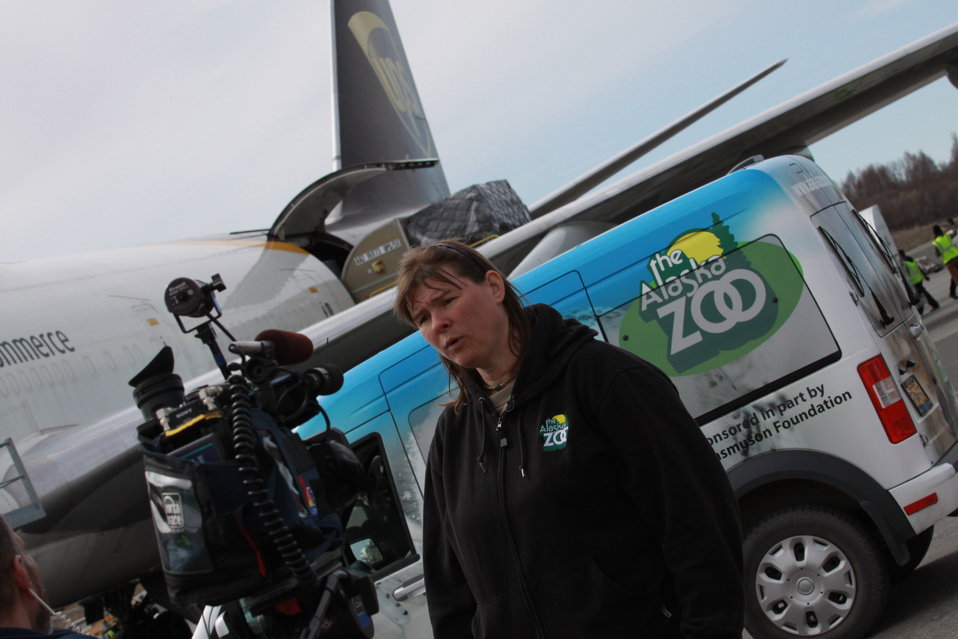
jenen interview